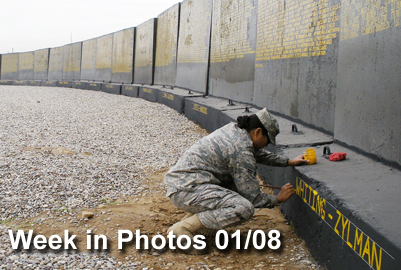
Week in Photos

Air Force Week in Photos for Jan. 8, 2010, highlights photos from around the Air Force. In this photo, Airman 1st Class Tanja Kambel updates the memorial wall at Kirkuk Regional Air Base, Iraq. The memorial wall holds the names of all the servicemembers who lost their lives during Operation Iraqi Freedom since the start of the campaign in 2003.